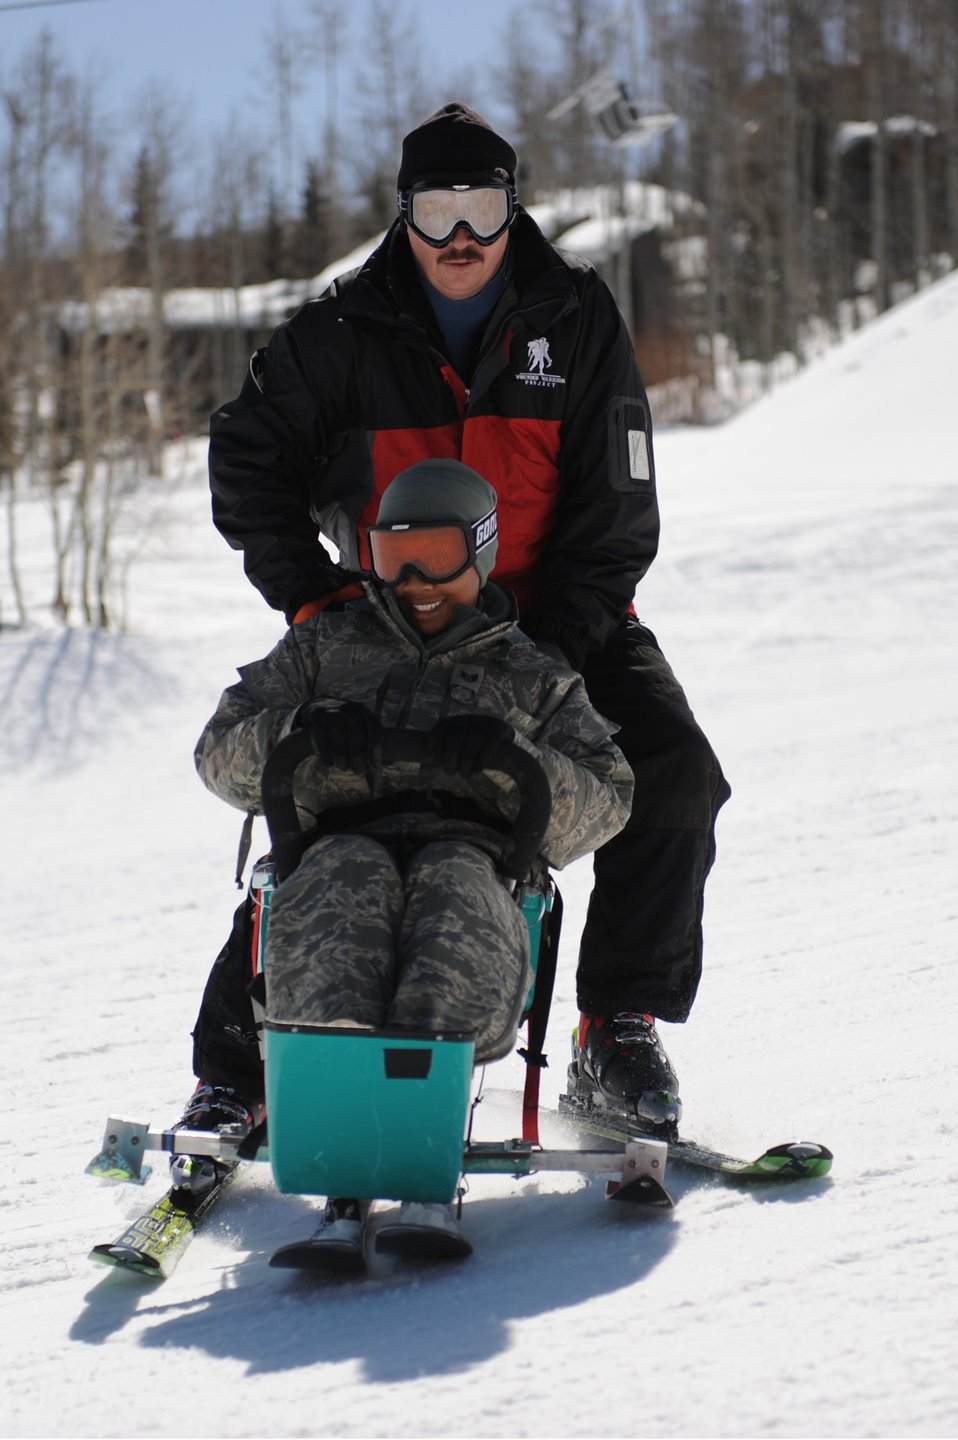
The power of the human spirit

Carl Desrosiers helps Staff Sgt. Mareshah Haynes experience a mono-ski March 28, 2010, at Snowmass Village, Colo. Sergeant Haynes is a print journalist assigned to the Defense Media Activity-San Antonio who is covering the 24th National Disabled American Veterans Winter Sports Clinic. Mr. Desrosiers is a ski instructor. The event is sponsored by the Department of Veterans Affairs and Disabled American Veterans.